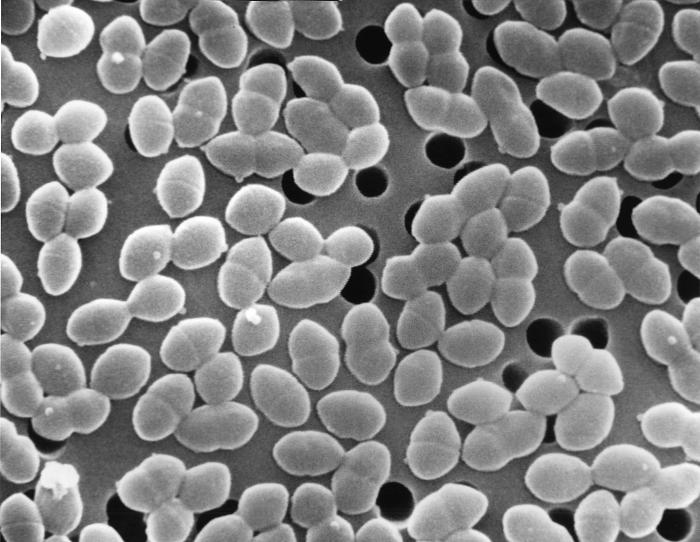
This scanning electron micrograph (SEM) depicted numbers of bacteria, which were identified as being Gram-positive Enterococcus sp. bacteria. Previously identified as "Group D" Streptococcus organisms, the most clinically relevant of these bacteria are, E. faecalis, and E. faecium.